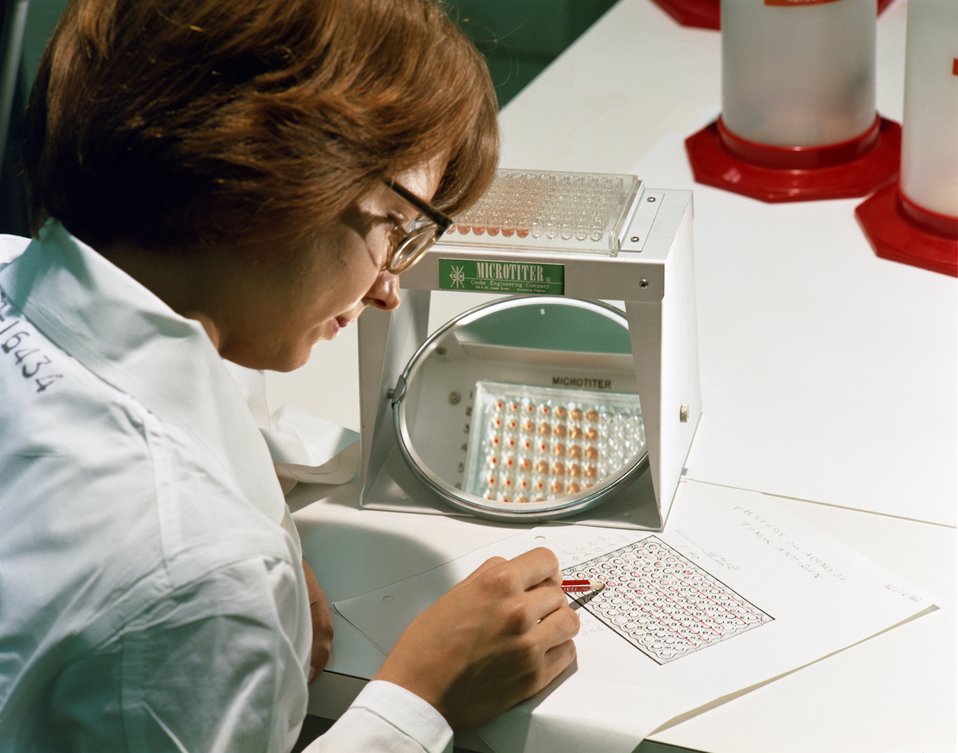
Zonal Centrifuge Lab Work K-703 1967 Oak Ridge

67-216 DOE photo Frank Hoffman 8-29-1967 Oak Ridge Tennessee